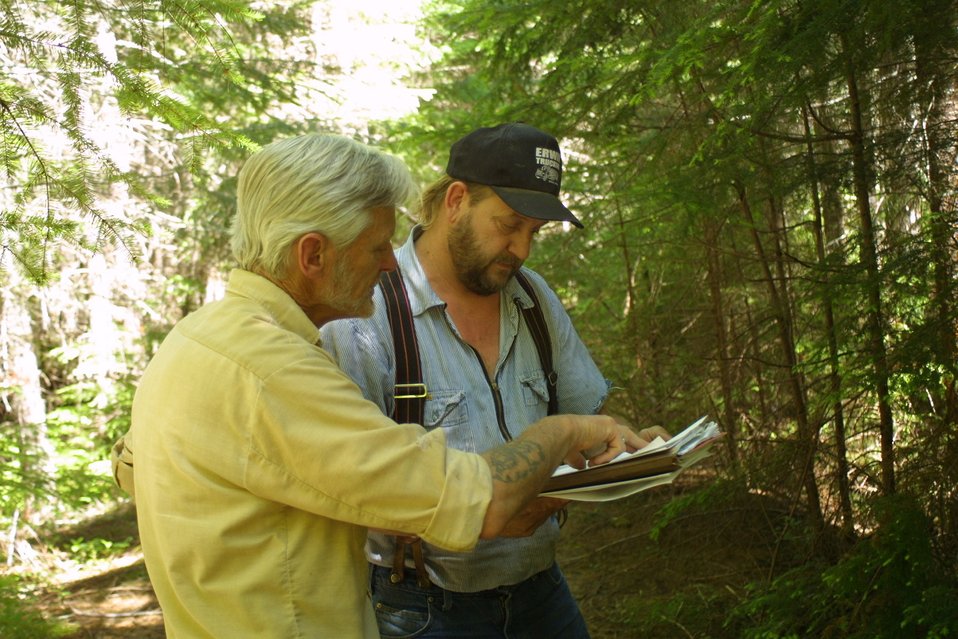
Camas East Timber Sale in Late Successional Reserve.